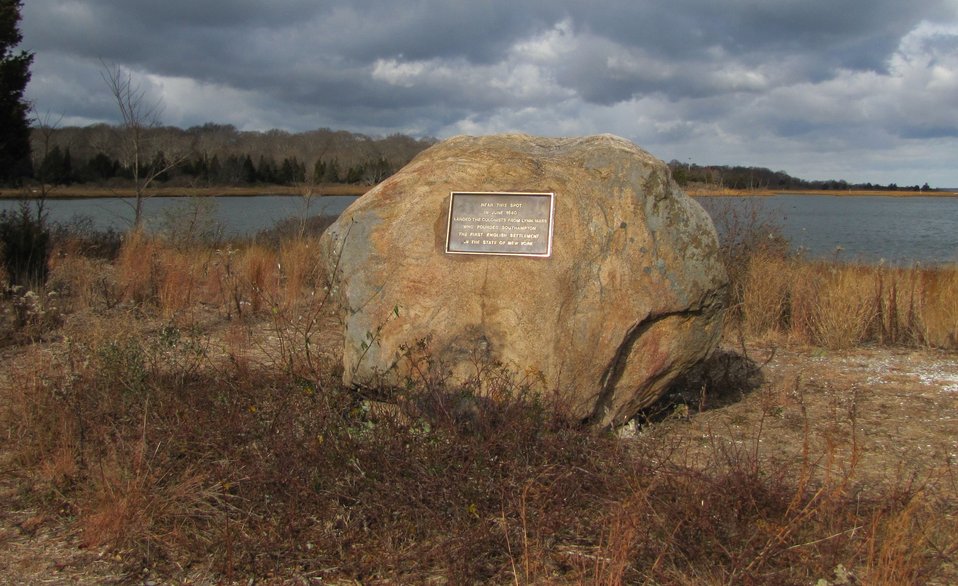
Rock indicating first settlers

Stone near Conscience Point refuge which reads: 'Near this spot in June 1640 landed the colonists from Lynn, Mass. who founded Southampton - the first English settlement in the state of New York.'